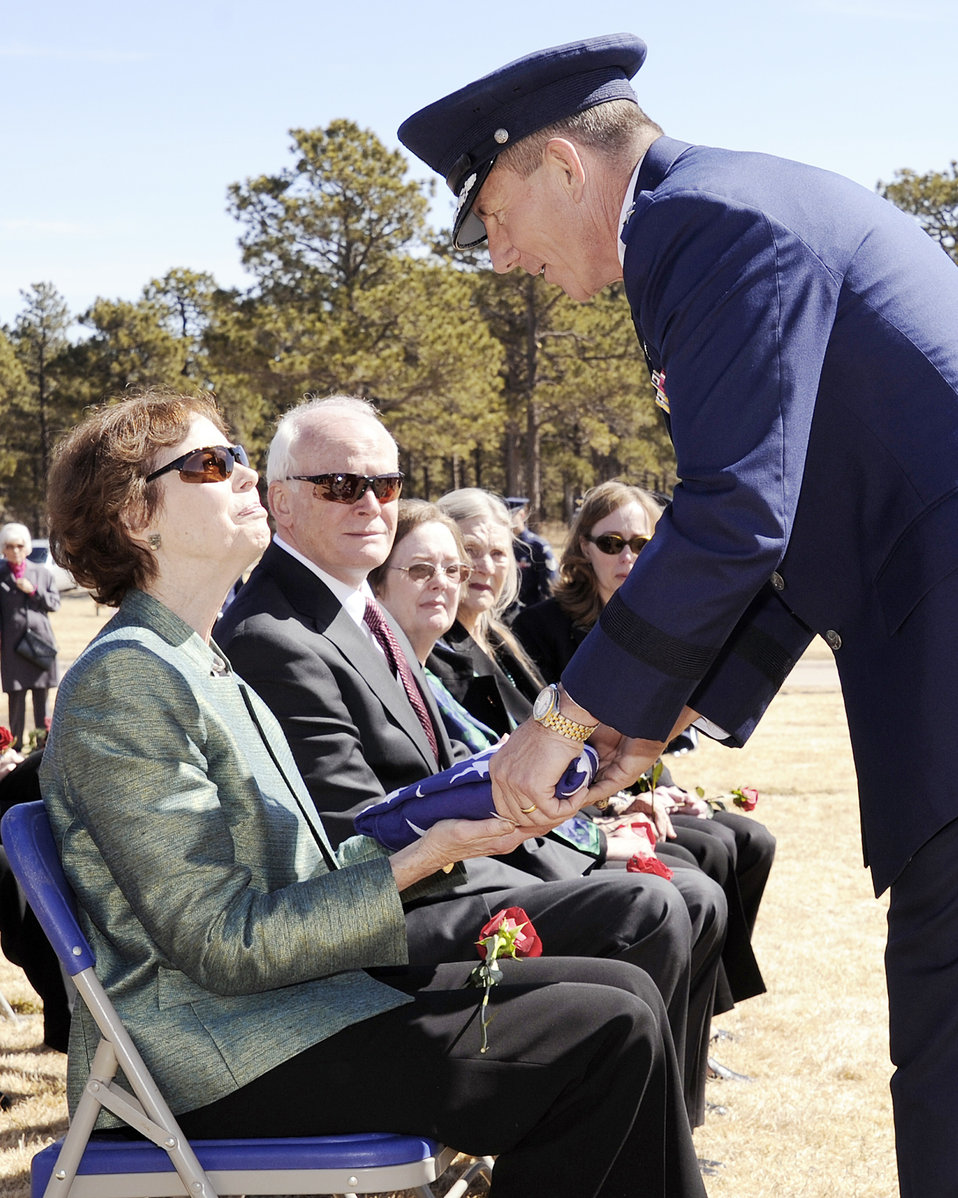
General Clark honored with service

Lt. Gen. Mike Gould, U.S. Air Force Academy superintendent, presents the American flag to Carolyn Clark Miller, the daughter of Lt. Gen. Albert P. Clark, at the Academy Cemetery March 17, 2010, during the graveside service. General Clark was the Academy's sixth superintendent from Aug. 1, 1970 to July 31, 1974. General Clark was a 1936 graduate of West Point and went on to a flying career after graduation. His post-World War II assignments include staff positions at Tactical Air Command, Continental Air Command, Air Defense Command and Air Force Headquarters.